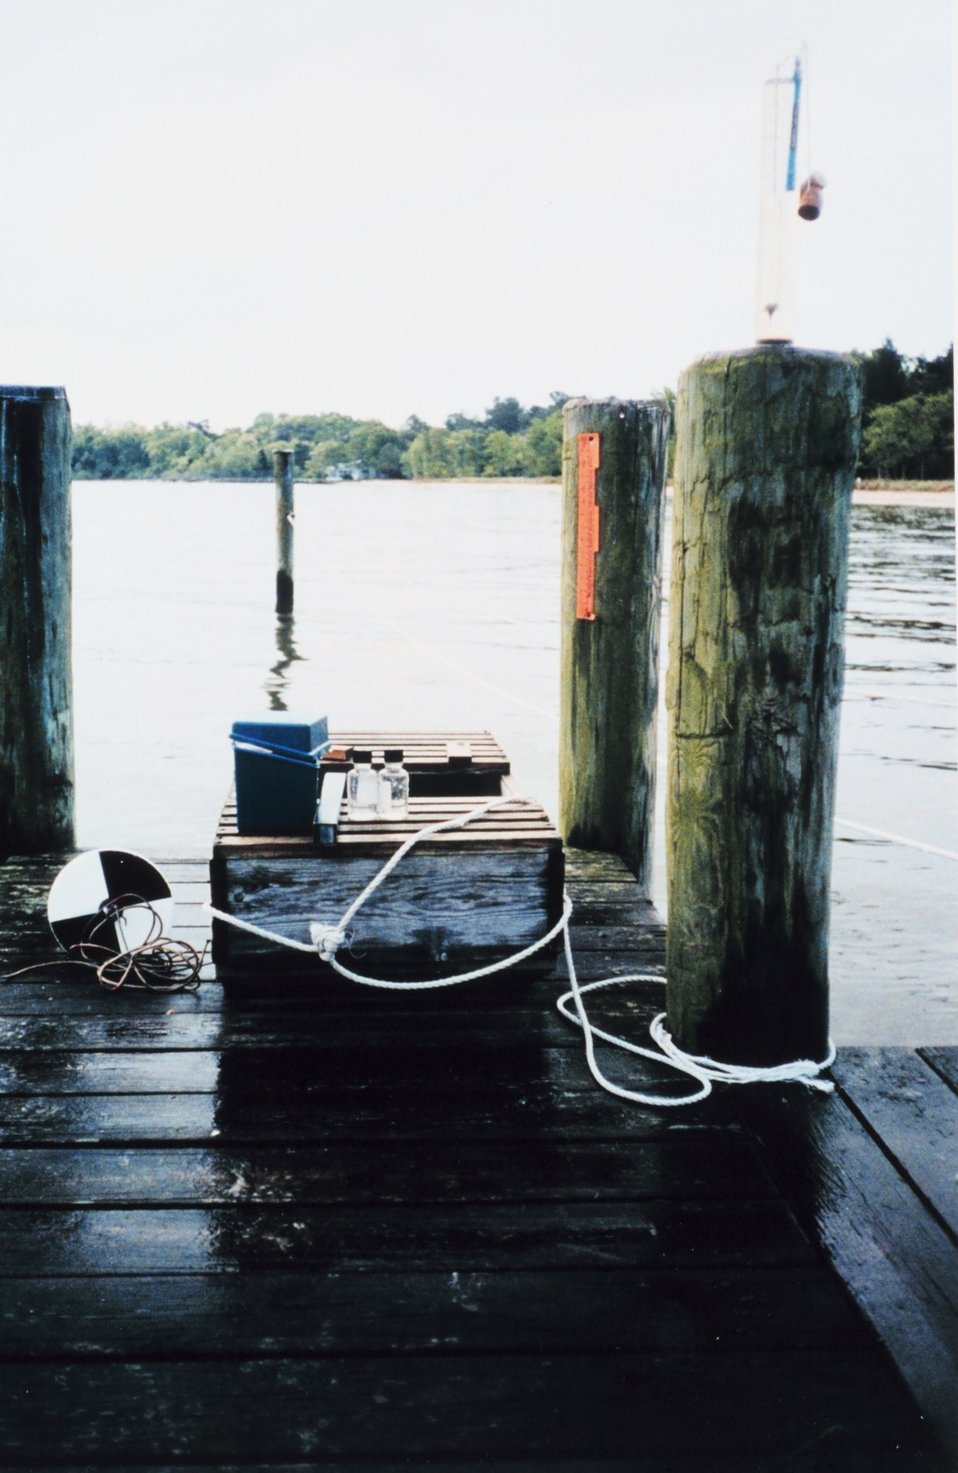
Water quality testing equipment and a 'live box' for crabs.